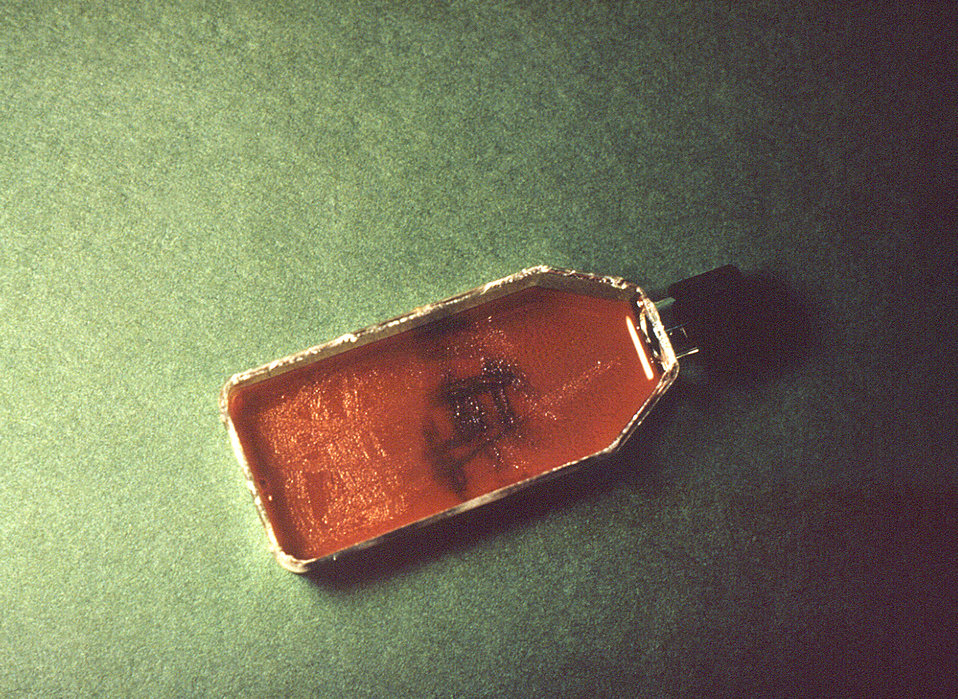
This is a flask containing 'Transgrow' medium used to transport an N. gonorrhoeae specimen to a laboratory for testing.